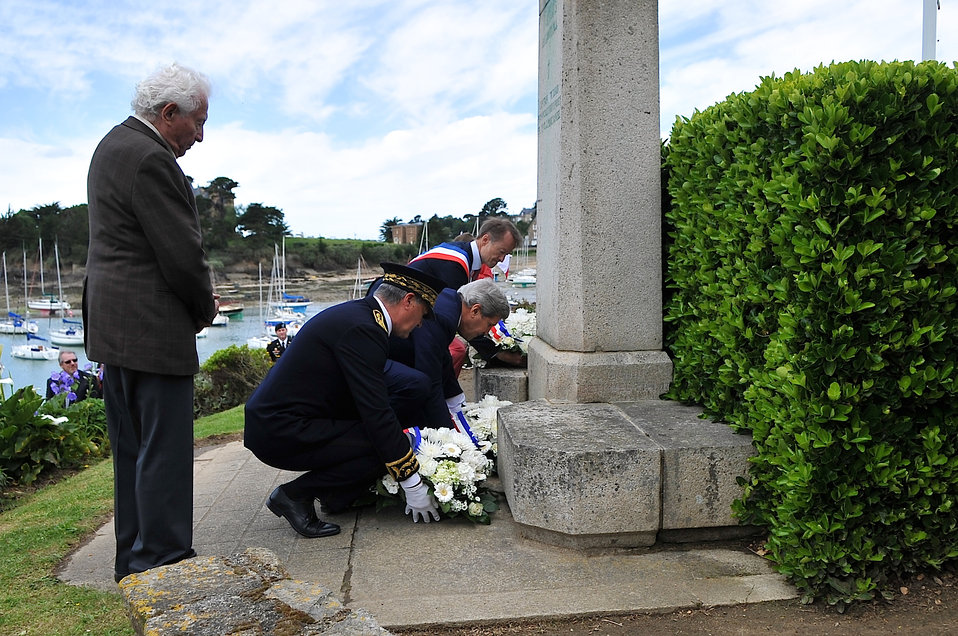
Secretary Kerry, Brittany Officials, Photographer Vaccaro Pay Tribute to American WWII Victims

World War II photographer Tony Vaccaro watches as Prefect Patrick Strzoda, U.S. Secretary of State John Kerry, and Mayor Vincent Denby-Wilkes place wreathes at a memorial honoring three Americans who died liberating the community from Nazi occupiers in 1944, during a ceremony in Saint Briac, France, on June 7, 2014.